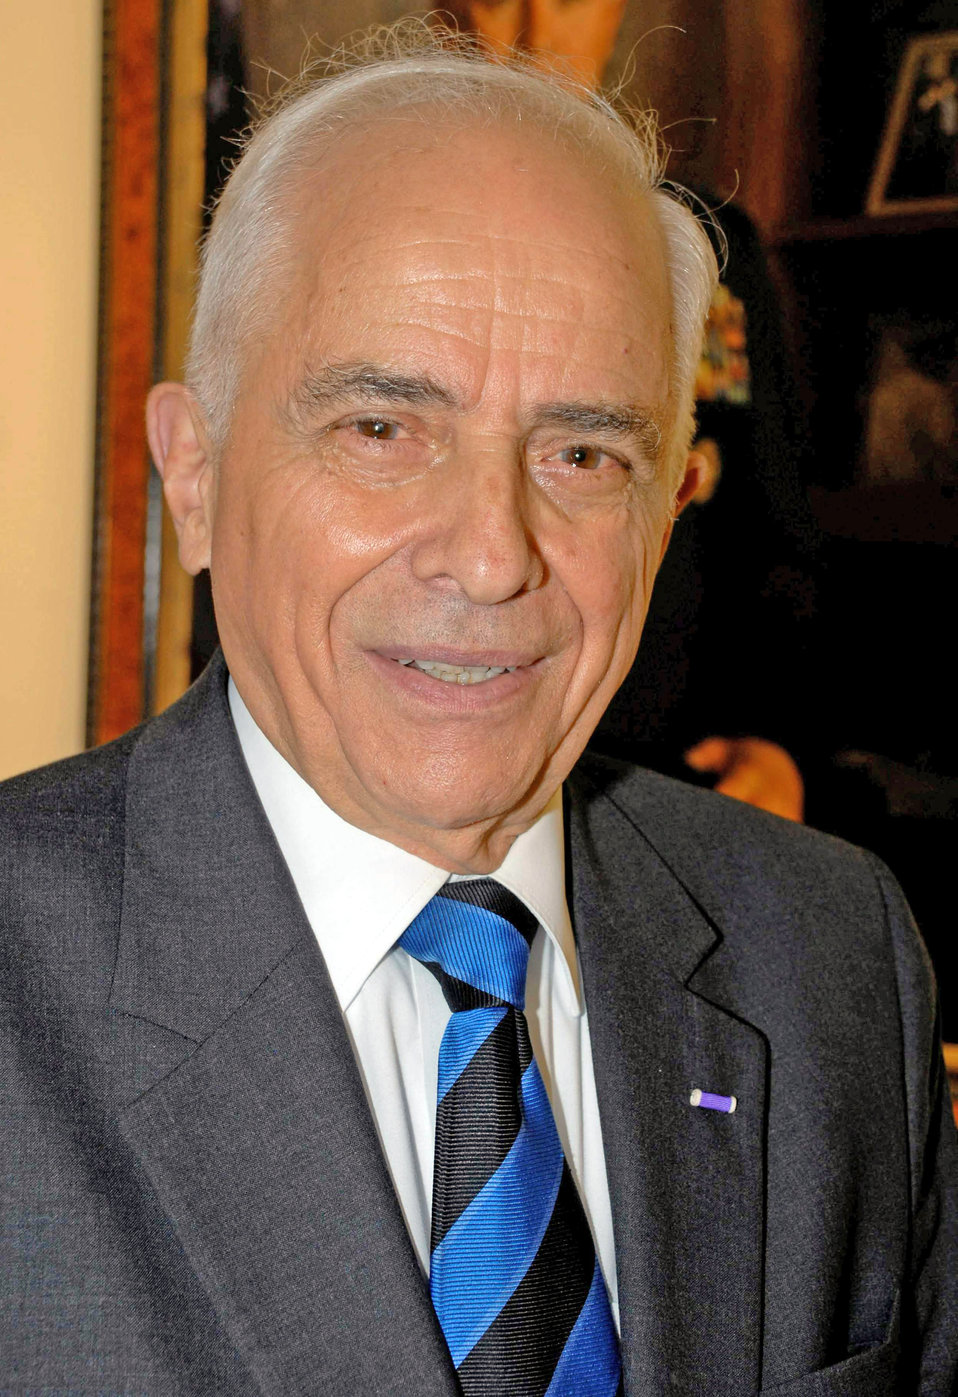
Air Force employee serves more than half a century

Anthony Duno is the U.S. Air Forces in Europe's real estate chief.